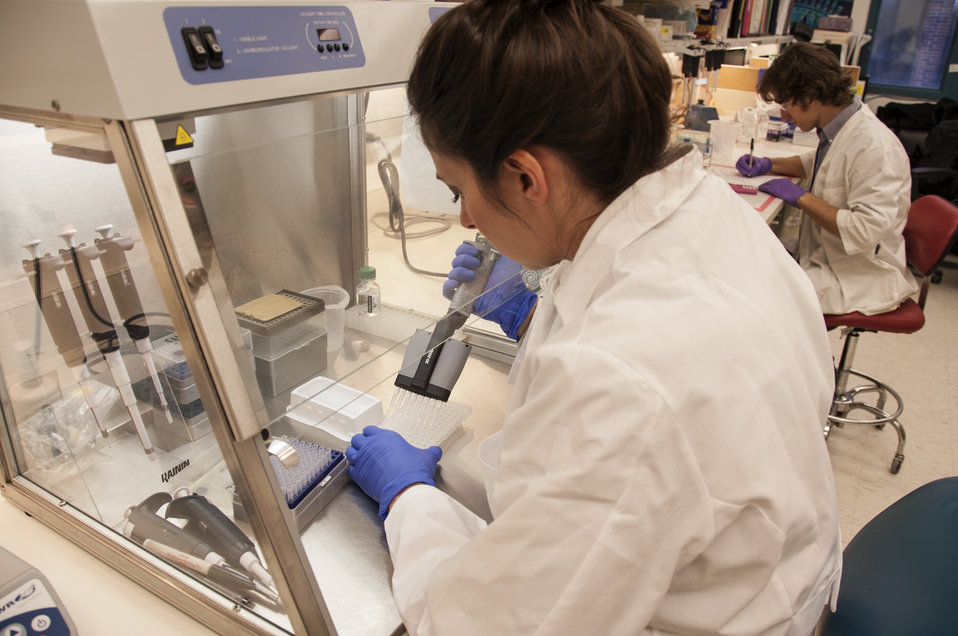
Stem Cell Research (0436)

Jessica Lo Surdo, M.S. (foreground), an FDA staff scientist, studies chain reactions in stem cells in an FDA laboratory on the National Institutes of Health campus in Bethesda, Md. Ross Marklein, Ph.D., a post-doctoral research fellow (background), records findings.

To learn more about stem cell research, read this FDA Consumer Update:

Adult Stem Cell Research Shows Promise

This photo is free of all copyright restrictions and available for use and redistribution without permission. Credit to the U.S. Food and Drug Administration is appreciated but not required.

Privacy and use information: www.flickr.com/people/fdaphotos/